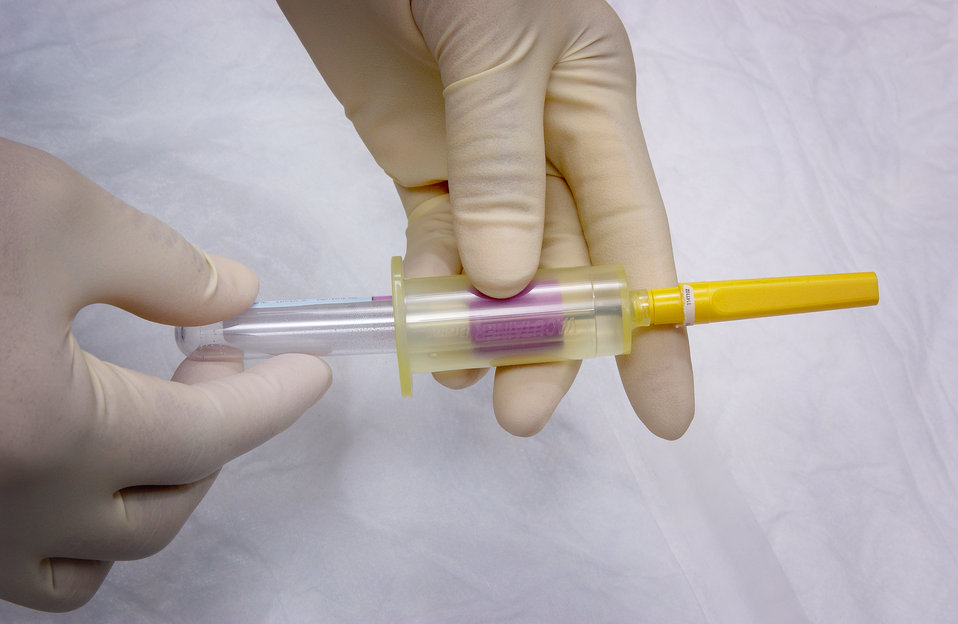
This image depicts a trained phlebotomist, i.e., a technician skilled in the practice of drawing blood from a patient, who had assembled a venipuncture needle and canister, which will be used to create a port through which blood will be drawn from a patient's antecubital arm vein. This image is the seventh in a series of 19 images outlining the steps involved in extracting blood during the venipuncture process.